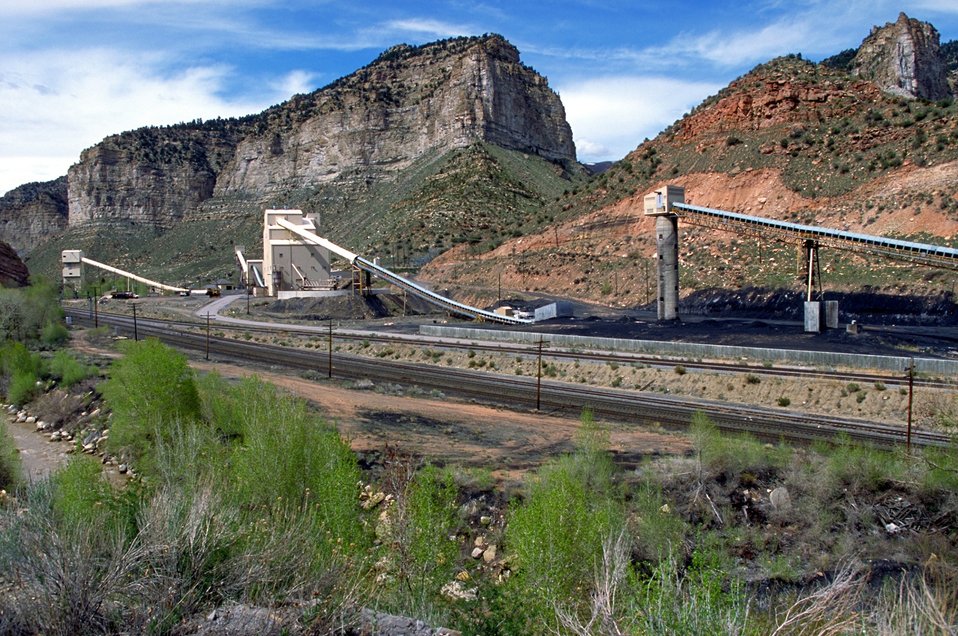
Coal production near Price, Utah.